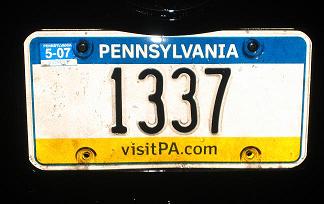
Picture of personalized PA license plate '1337'.